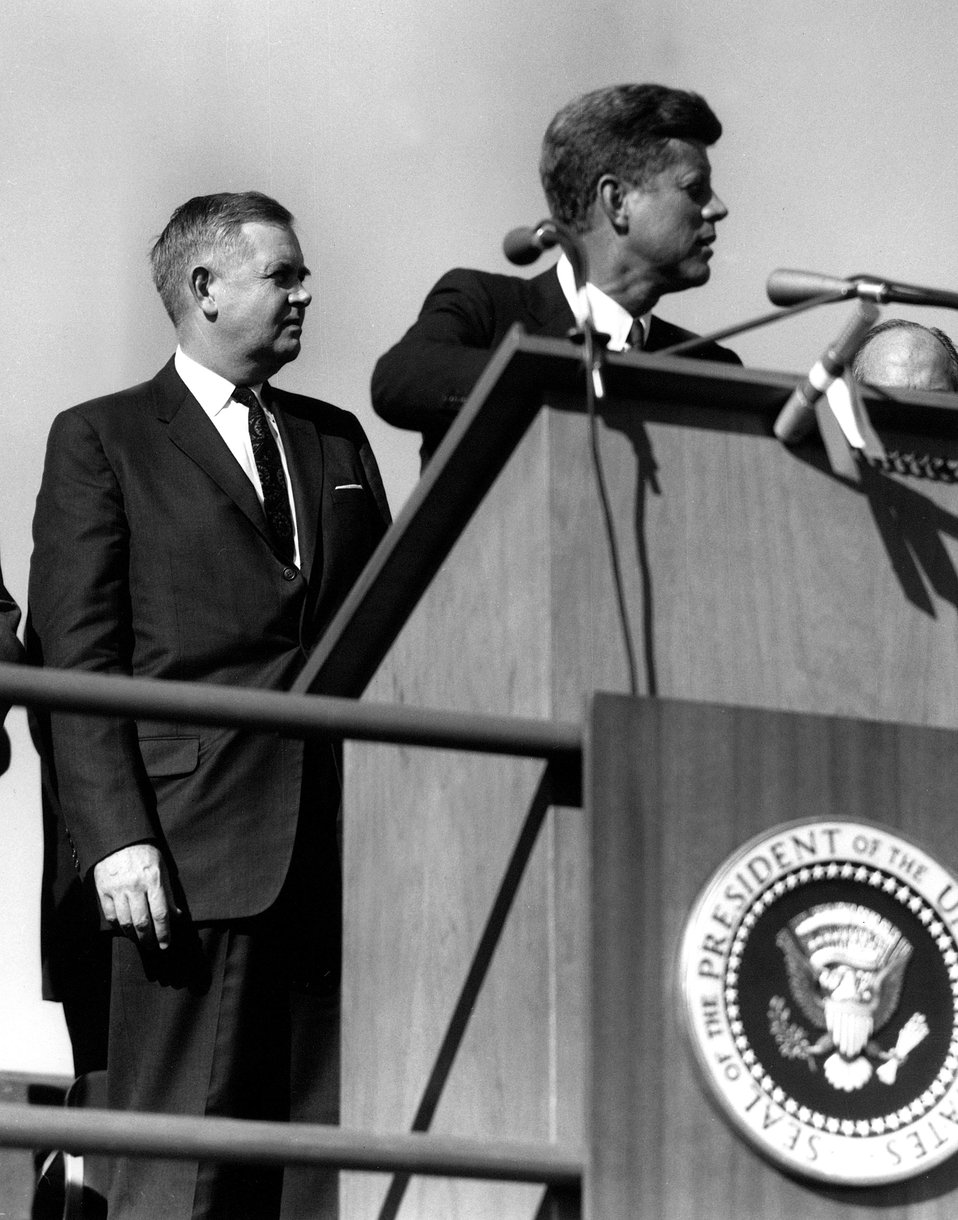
The late President Kennedy used an atomic pointer to start an automated 60-foot crane that broke ground on September 26 for construction by the Washington Public Power Supply System of an 800,000 electrical kilowatt generating plant which will use byproduct steam from the AEC's New Production Reactor at the Hanford works in Washington.